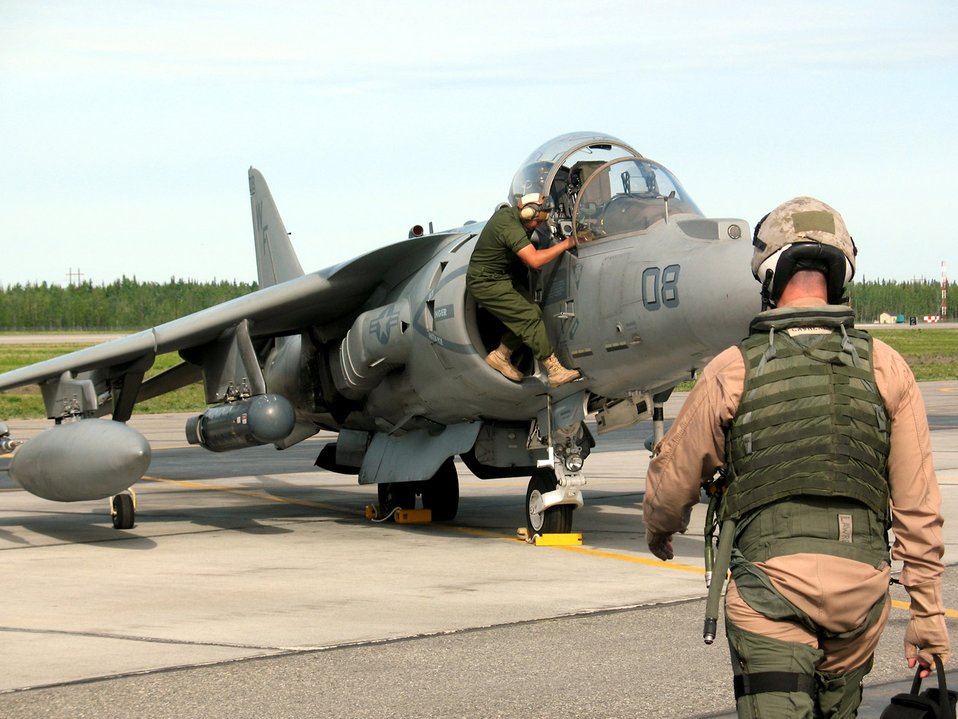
Marines play along in Red Flag

A Marine Corps pilot walks toward his AV-8H Harrier June 4 at Eielson Air Force Base, Alaska, as the crew chief finishes some last-minute preparations before a Red Flag-Alaska exercise mission. The exercises highlight joint-service and coalition training with air-combat scenarios executed by role-playing fighter jets over the Alaskan wilderness.